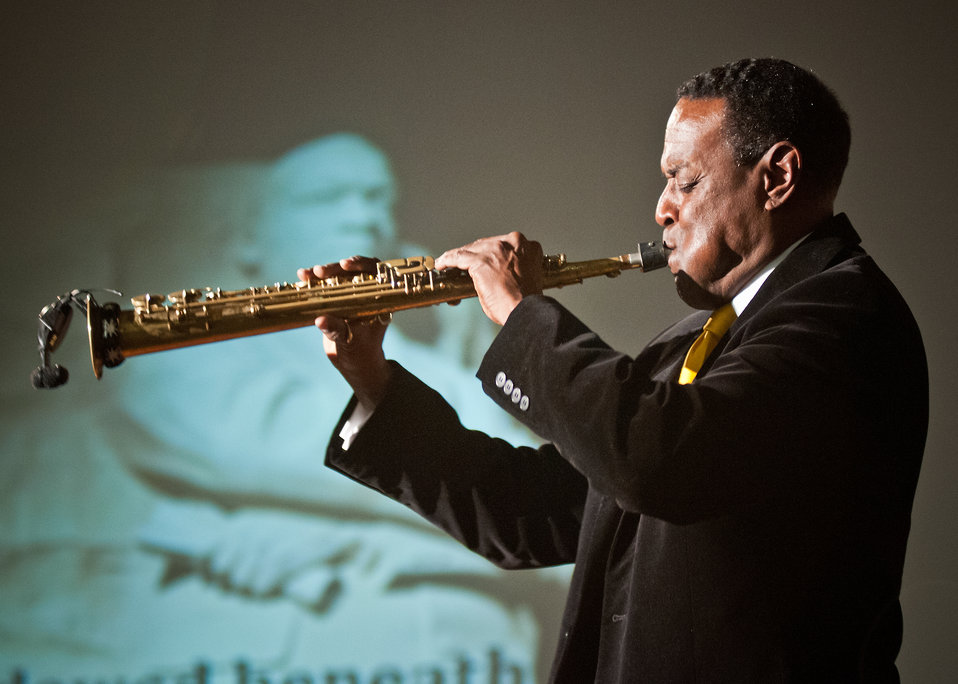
J. Plunky Branch of the Afro-Funk Jazz Group, “Plunky and Oneness” performs a saxophone solo of The Negro National Anthem at the National Service Day and Martin Luther King Celebration in honor of Dr. Martin Luther King Jr.’s contributions to the Civil Rights Movement at the United States Department of Agriculture in Washington, D.C., on Thursday, January 12, 2012.